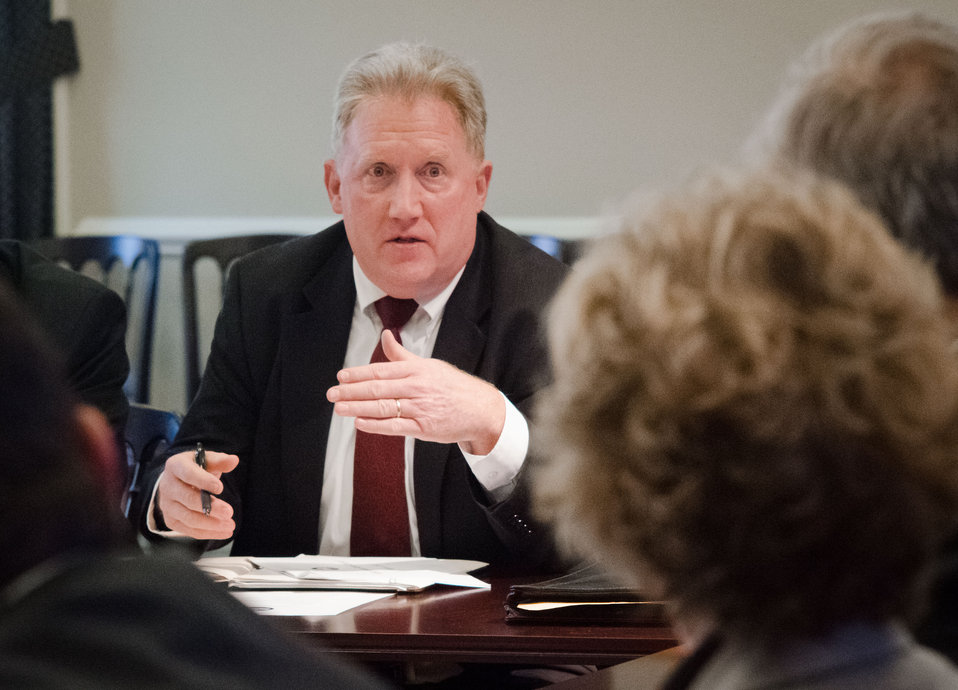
Environmental Protection Agency Chief Agricultural Counselor Larry Elworth speaks during the White House Rural Council chaired by Agriculture Secretary Tom Vilsack at the White House in Washington, D.C. on Friday, Oct. 5, 2012. The White House Rural Council discusses recent White House announcements and Secretary Vilsack asked council members to outline their work plan for the coming months.